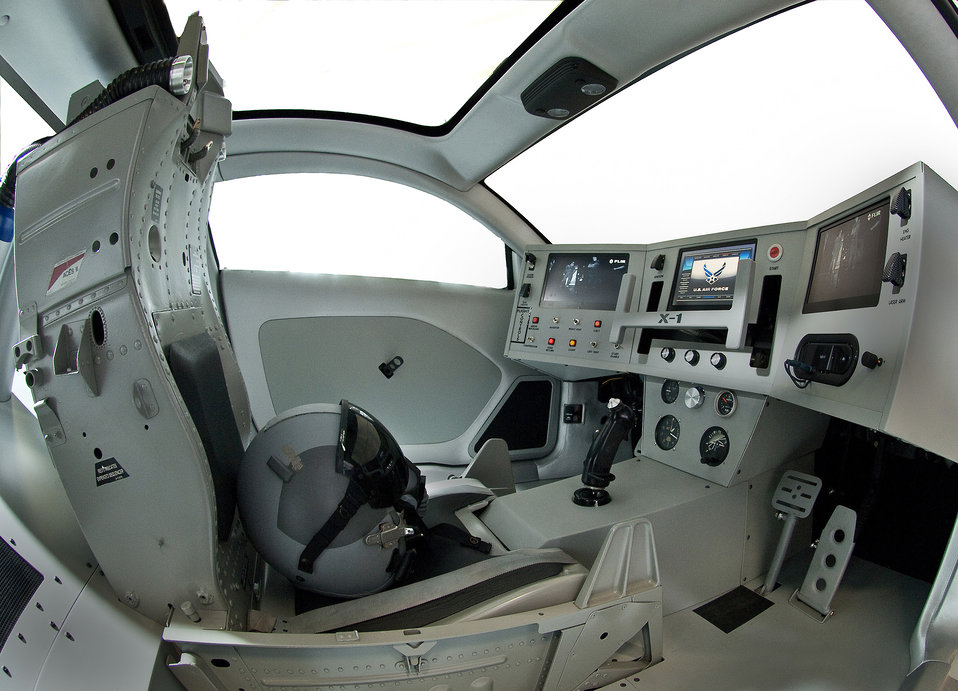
Super Car Tour

The ?X-1? Mustang is matte-pearlescent painted with a jet cockpit that includes a single-driver ejection seat in the center of the vehicle, short shifter, flight stick and advanced instrumentation panel. The X-1 also has a concealed motorized steering wheel, custom foot pedals, GPS transponder and the innovative dash is equipped with a touch screen monitor and sensor pack that displays night and thermal vision. The 4.6 liter engine includes 3-valve Ford Racing heads, cold air intake, hot rod cams, and long tube headers creating 500hp and is maintained by a custom Ford Racing Tuning Program. The X-1 is one of the Air Force's newest mobile marketing assets and will be touring high schools and a variety of Air Force sponsored events as part of the 2009 Super Car Tour.